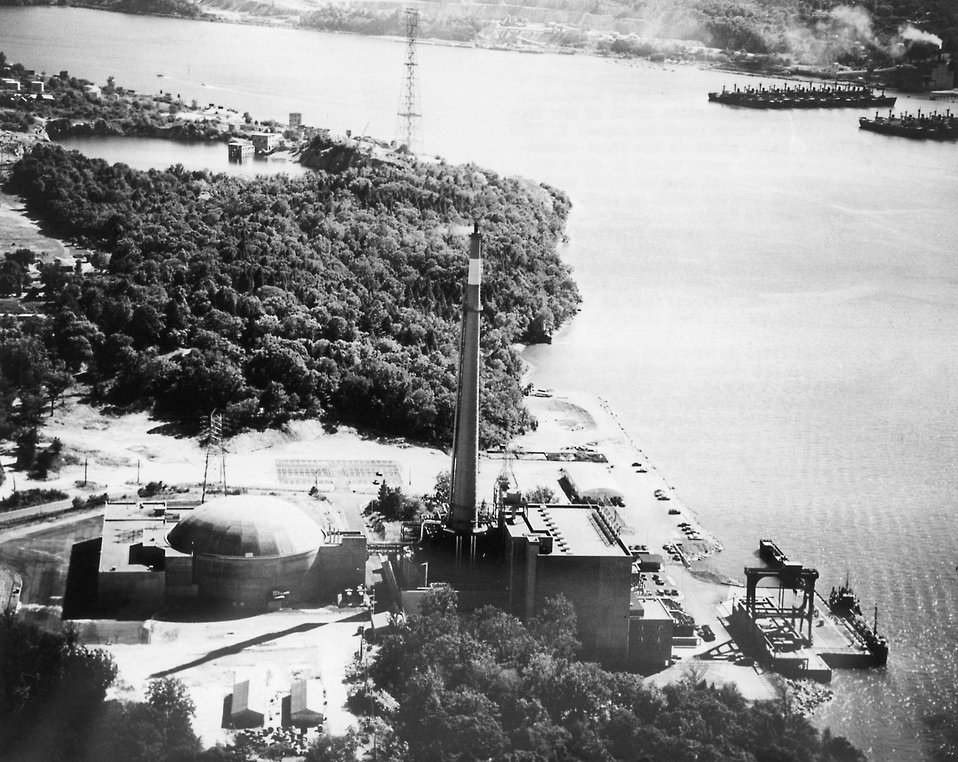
Consolidated Edison's Indian Point nuclear power station is located on the Hudson River about 24 miles north of New York City. This station became operable August 7, 1962. Circa 1963.